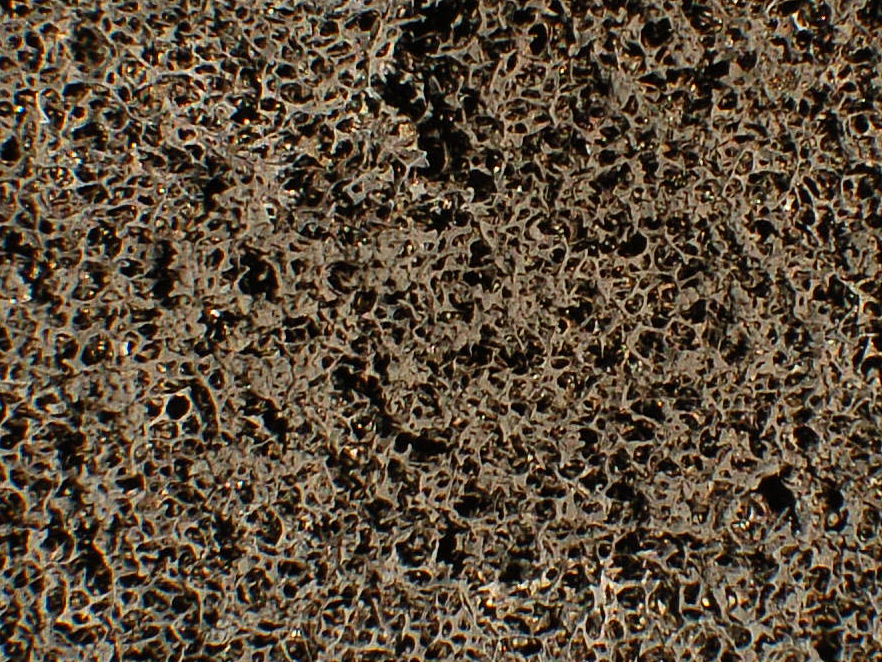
Carbon Nanofiber; Flammability

This microscope image of the remains of upholstery foam with carbon nanofiber additives after a burn test shows that the nanofibers in the foam retained their initial arrangement during the combustion process, forming an insulating structure with an extremely low density. Researchers believe that this 'carbon foam' acts as a sponge to absorb the molten foam during burning and to prevent dripping. (Image shows a sample 24 millimeters across.)